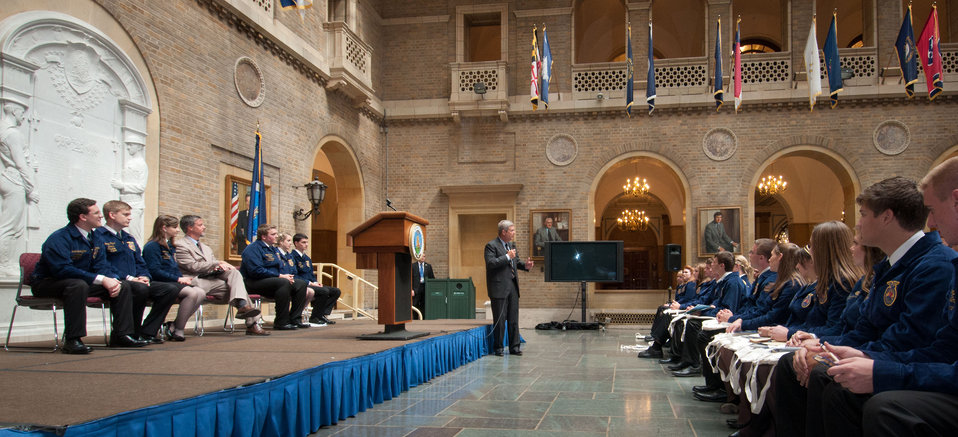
Agriculture Secretary Tom Vilsack speaks with the National Future Farmers of America (FFA) leadership at the U.S. Department of Agriculture Patio in Washington, DC, on Thursday, Juyly 28, 2011.